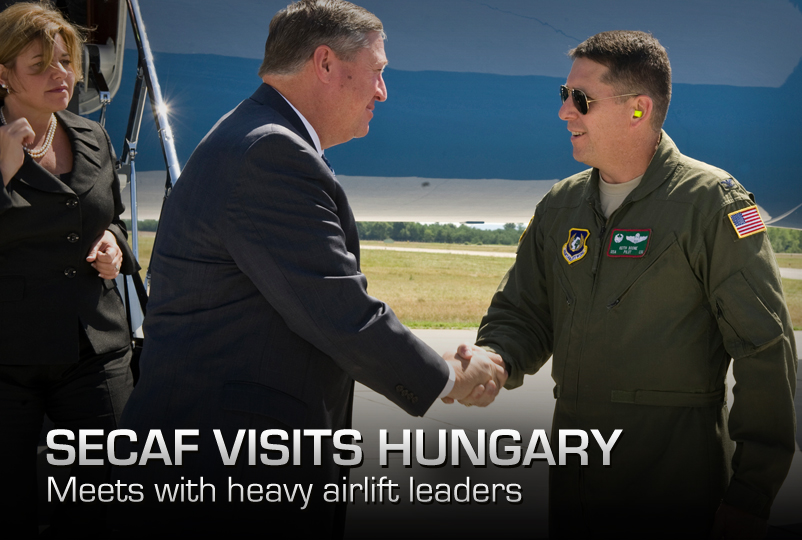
SecAF Visit

(U.S. Air Force graphic, photo/Master Sgt. Wayne Clark